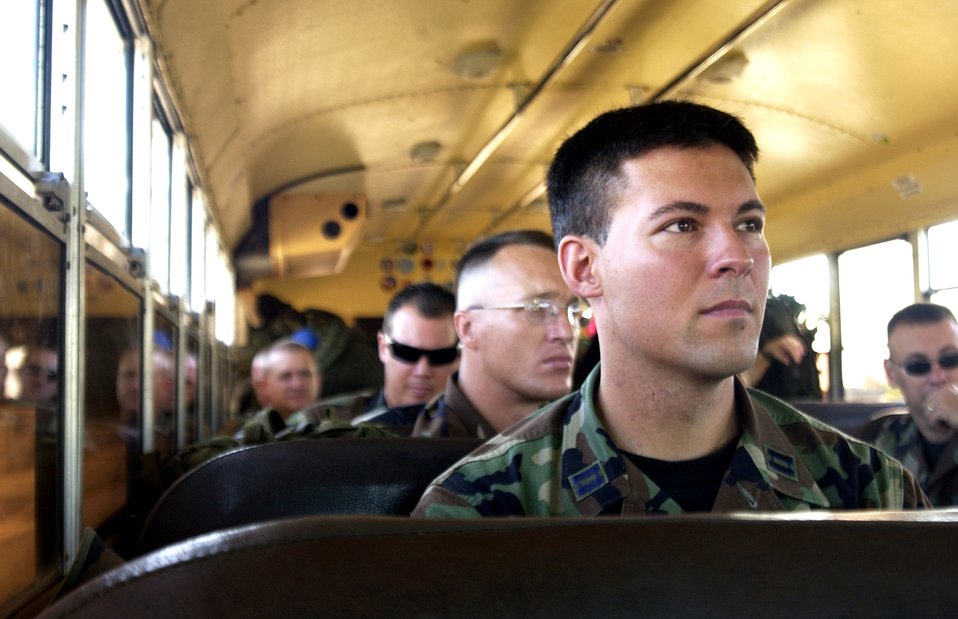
Typhoon response

Airmen depart Andersen Air Force Base, Guam, to board a ship to Wake Island. The Airmen, from the 36th Mobility Response Squadron and 36th Civil Engineering Squadron, traveled to Wake Island in response to the super typhoon that struck the island.